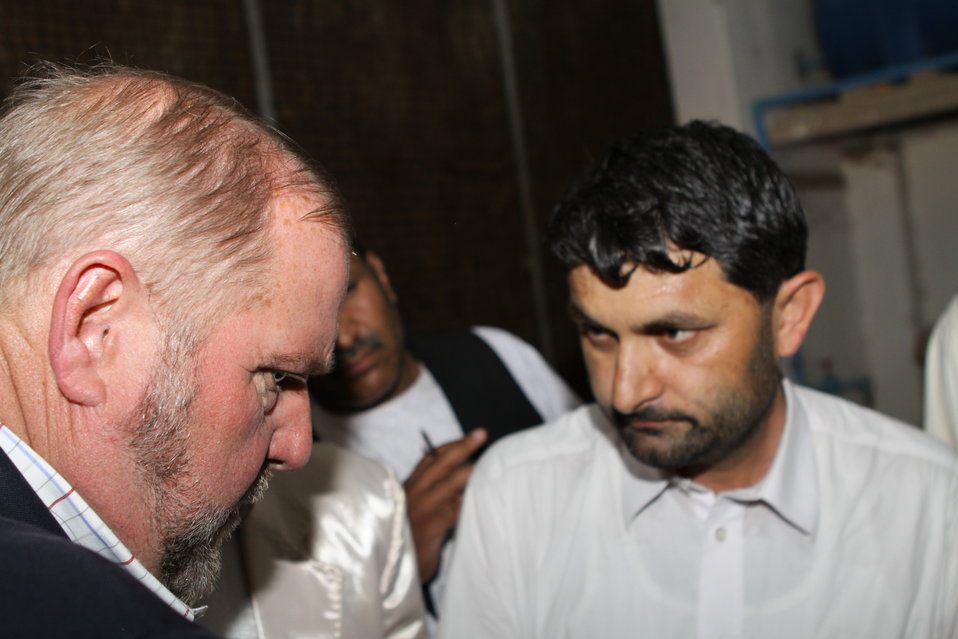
Bolan Poultry Farm